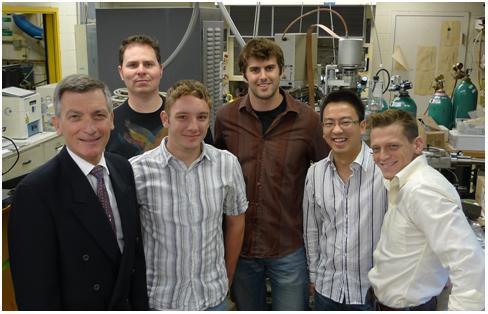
MIT

ARPA-E funding will be used to develop design parameters and a working prototype that can store and deliver energy on the roder of 5-kWh. The device will use cheap and domestically abundant materials and is expected to attain unprecedented current density and lifespan at an acceptably low cost. If successful, this project will facilitate the widespread deployment of renewable energy technologies in the United States.